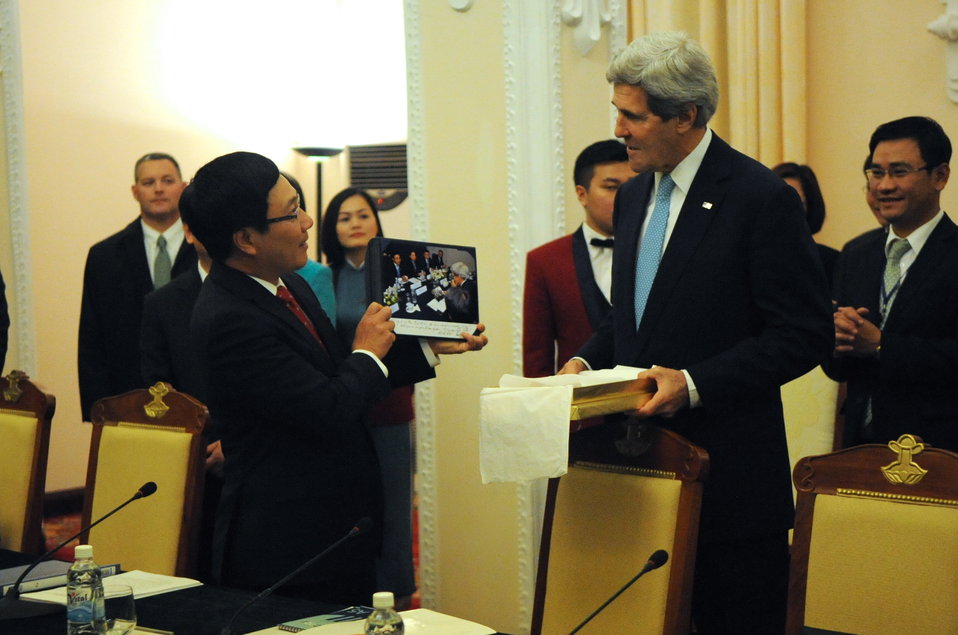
Secretary Kerry Presents Vietnamese Foreign Minister Minh With a Photograph

Vietnamese Foreign Minister Pham Binh Minh holds up a photograph of presented to him by U.S. Secretary of State John Kerry before a bilateral meeting in Hanoi, Vietnam, on December 16, 2013.